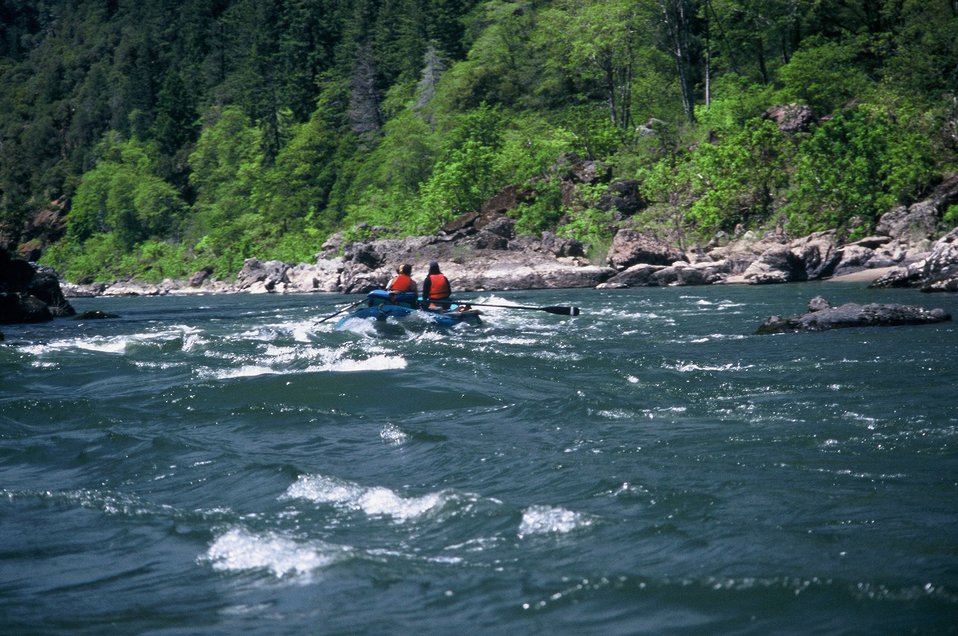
Wild section of the Rogue River from Grave Creek to Foster Bar May 19 to May 22.